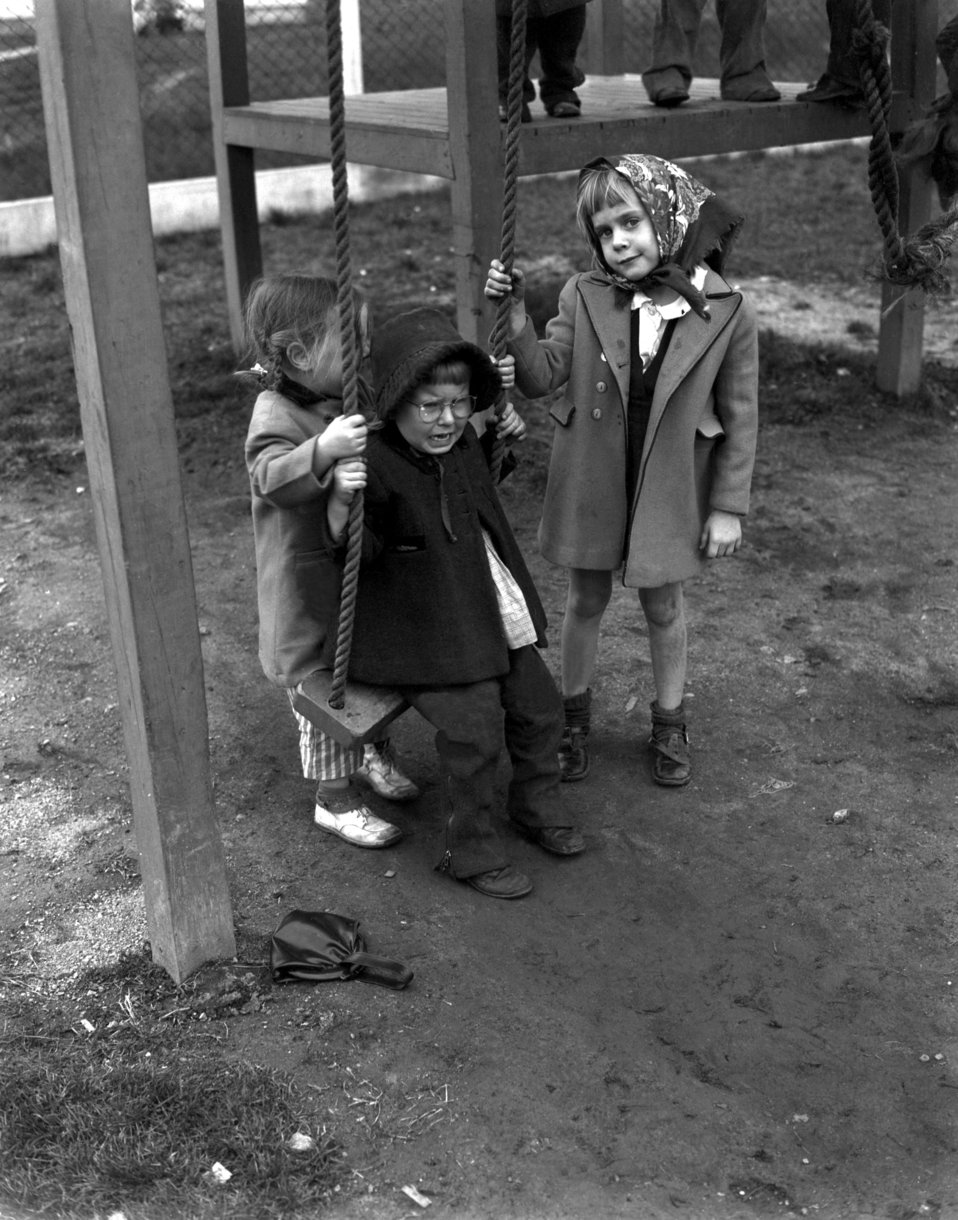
Nesper House Oak Ridge

3262-10 DOE photo Ed Westcott 1-23-1947 Child care for working mothers/famlies Oak Ridge Tennessee